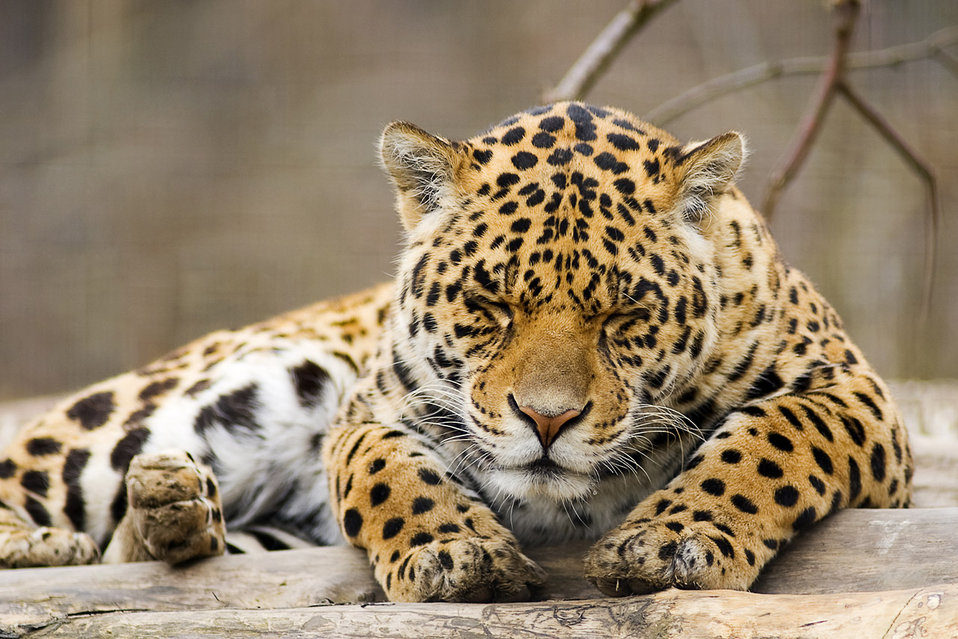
Siesta

Panther in a zoo.